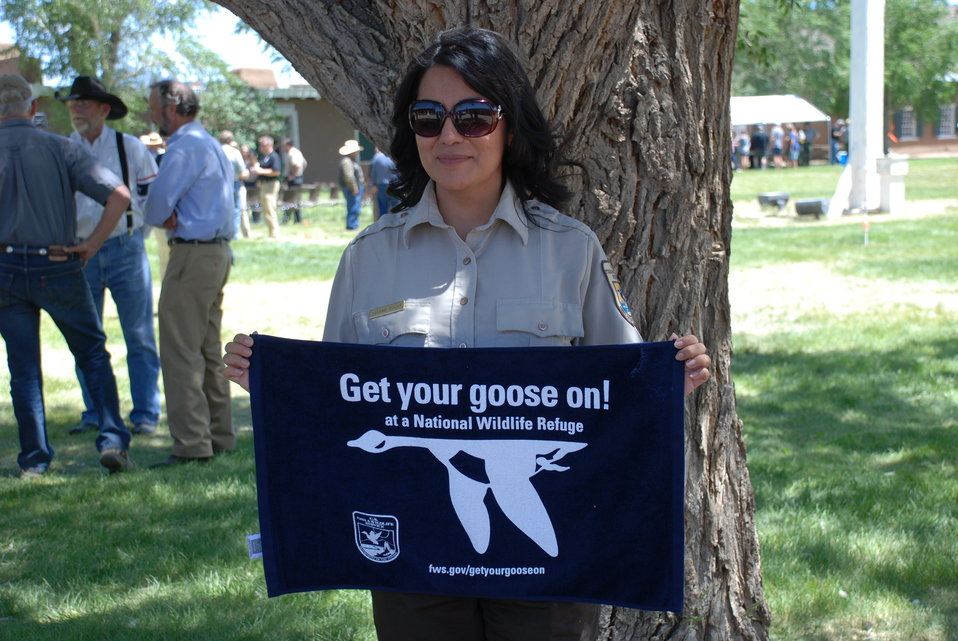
Leeann Duran Gets Her Goose On!